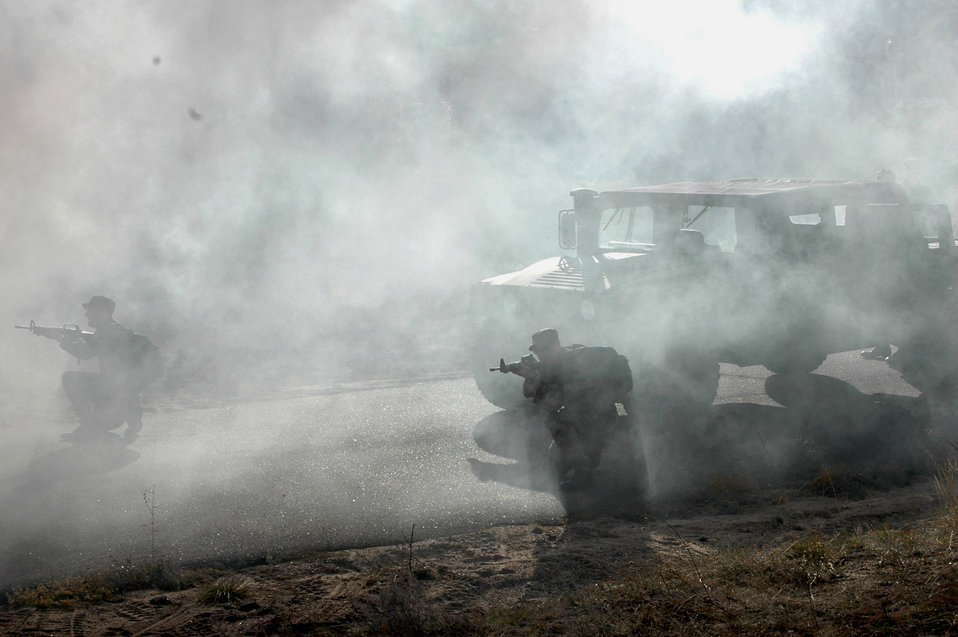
Academy conducts Commandant's Challenge 2006

Air Force Academy cadets react during an exercise scenario in a mock war zone in nearby Jacks Valley Nov. 19 during the annual Commandant's Challenge at the Academy in Colorado Springs, Colo.